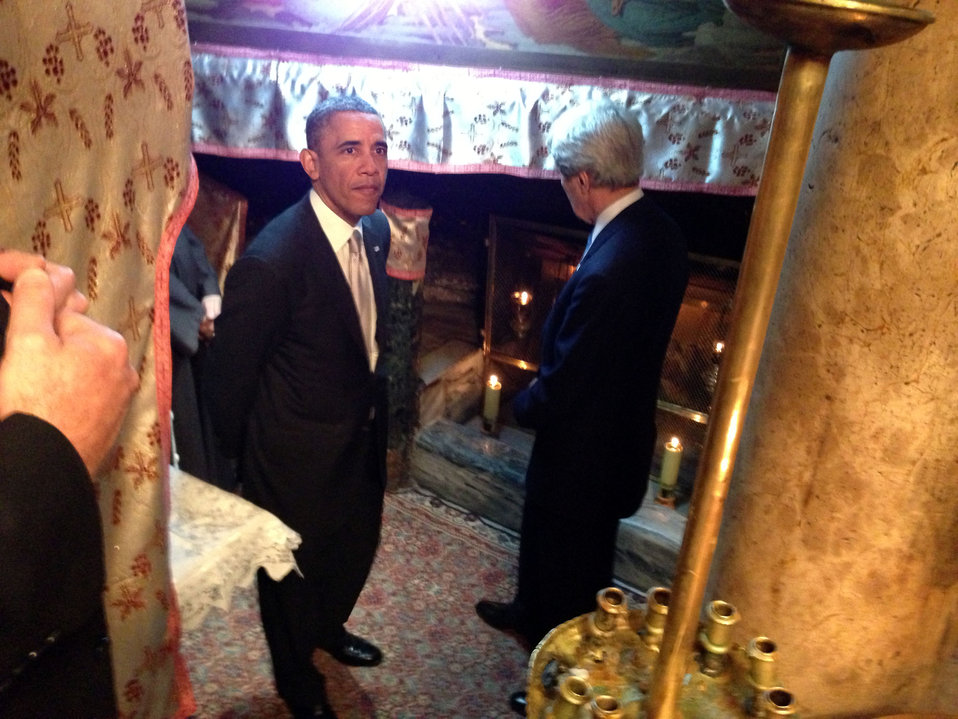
President Obama and Secretary Kerry Visit the Church of the Nativity

U.S. President Barack Obama and U.S. Secretary of State John Kerry visit the Church of the Nativity in Bethlehem on March 22, 2013.